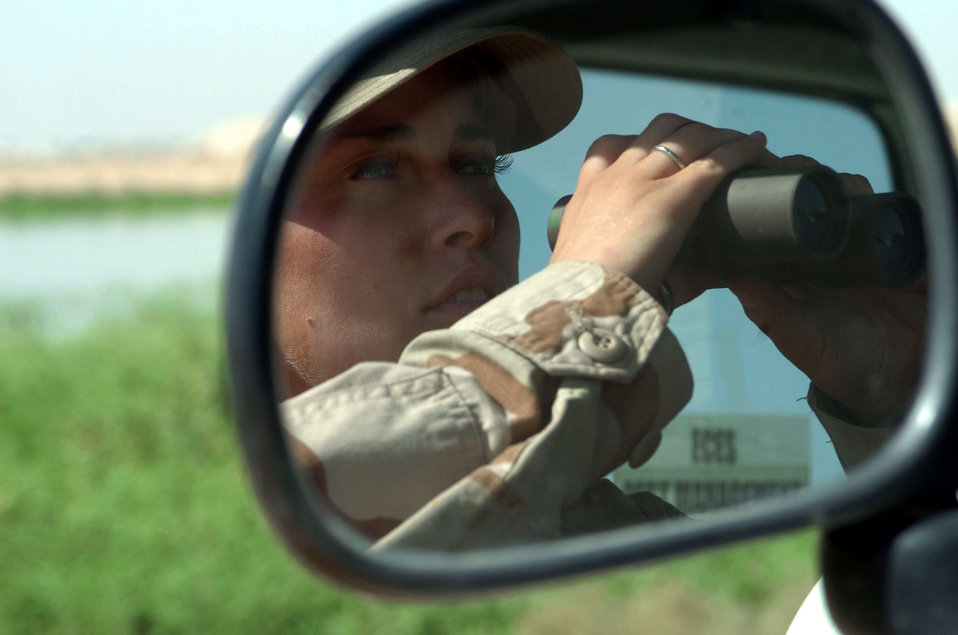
Pest patrol

BALAD AIR BASE, Iraq -- Senior Airman Staci Barratt scans the pond near the airfield here for birds Aug. 3. Airman Barratt is a pest management specialist with the 332nd Expeditionary Civil Engineer Squadron. She is deployed from the 177th Fighter Wing in Atlantic City, N.J.